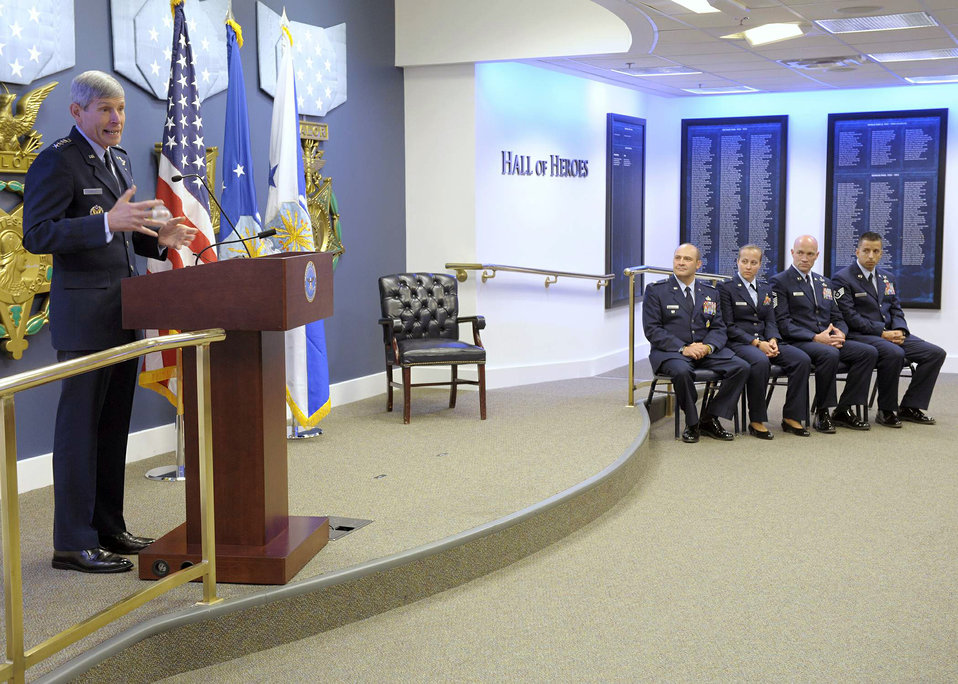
Air Force honors 2010 Sijan award winners

Air Force Chief of Staff Gen. Norton Schwartz gives remarks before presenting 2010 Lance P. Sijan USAF Leadership Awards to four recipients during a ceremony May 11, 2011, in the Pentagon's Hall of Heroes. This year's recipients are (seated from left) Lt. Col. Tony Millican, 1st Lt. Kathryn Miles, Senior Master Sgt. Brett Rogers and Staff Sgt. Michael Pereira. The Sijan Award was created in 1981 to recognize individuals who demonstrate the highest qualities of leadership both in and out of uniform.